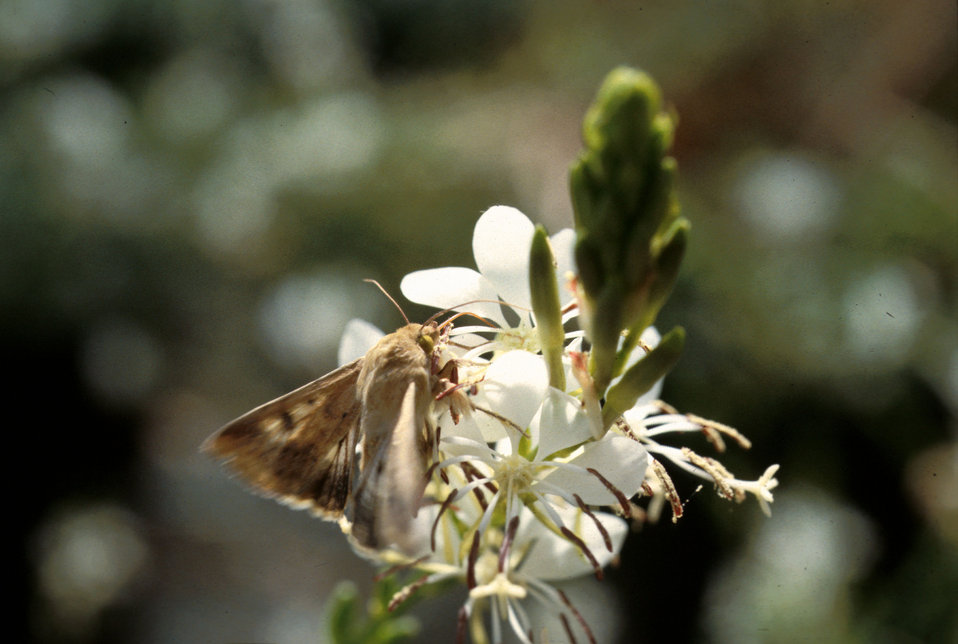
A corn earworm moth sips nectar from a night-blooming Gaura plant.